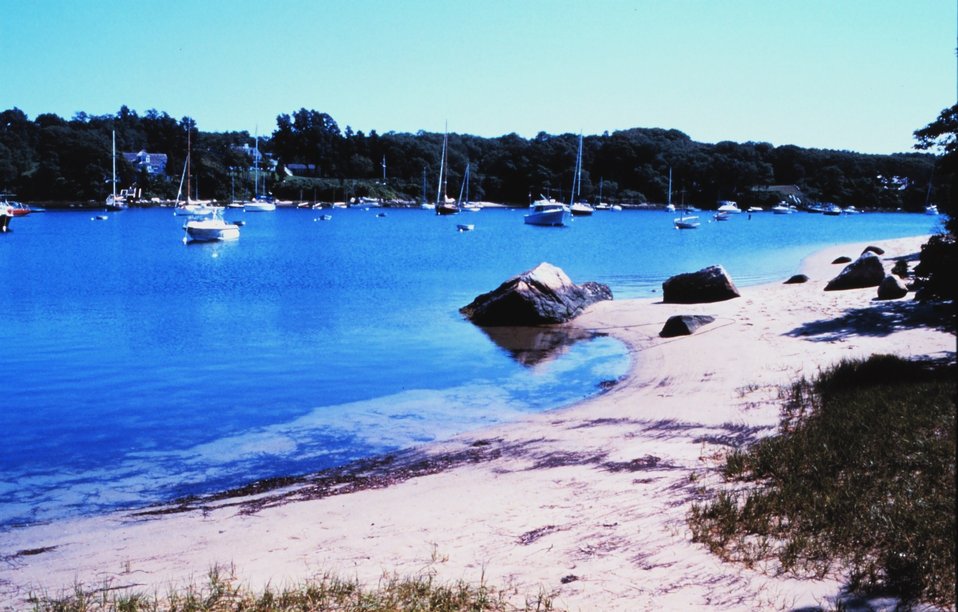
Quissett Harbor, Woods Hole, Falmouth